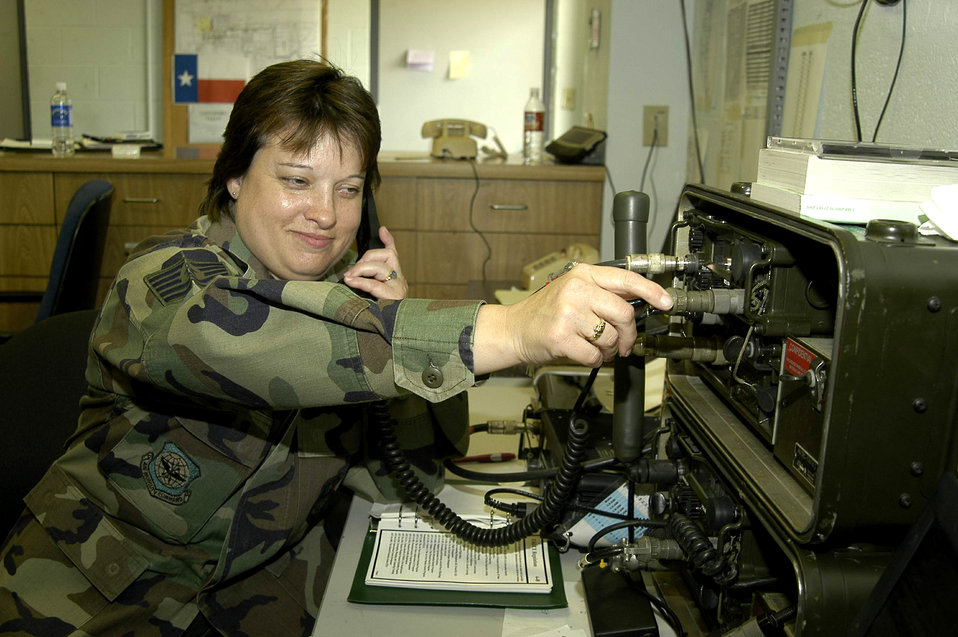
Hurricane Rita support

ELLINGTON FIELD, Texas -- Tech. Sgt. Michelle Kiral takes a radio call from an inbound aircraft supporting Hurricane Rita relief operations here. She is with the 136th Tanker Airlift Control Element from Fort Worth, Texas. The unit was wrapping up operations in Gulfport, Miss., when it was diverted here Sept. 24.